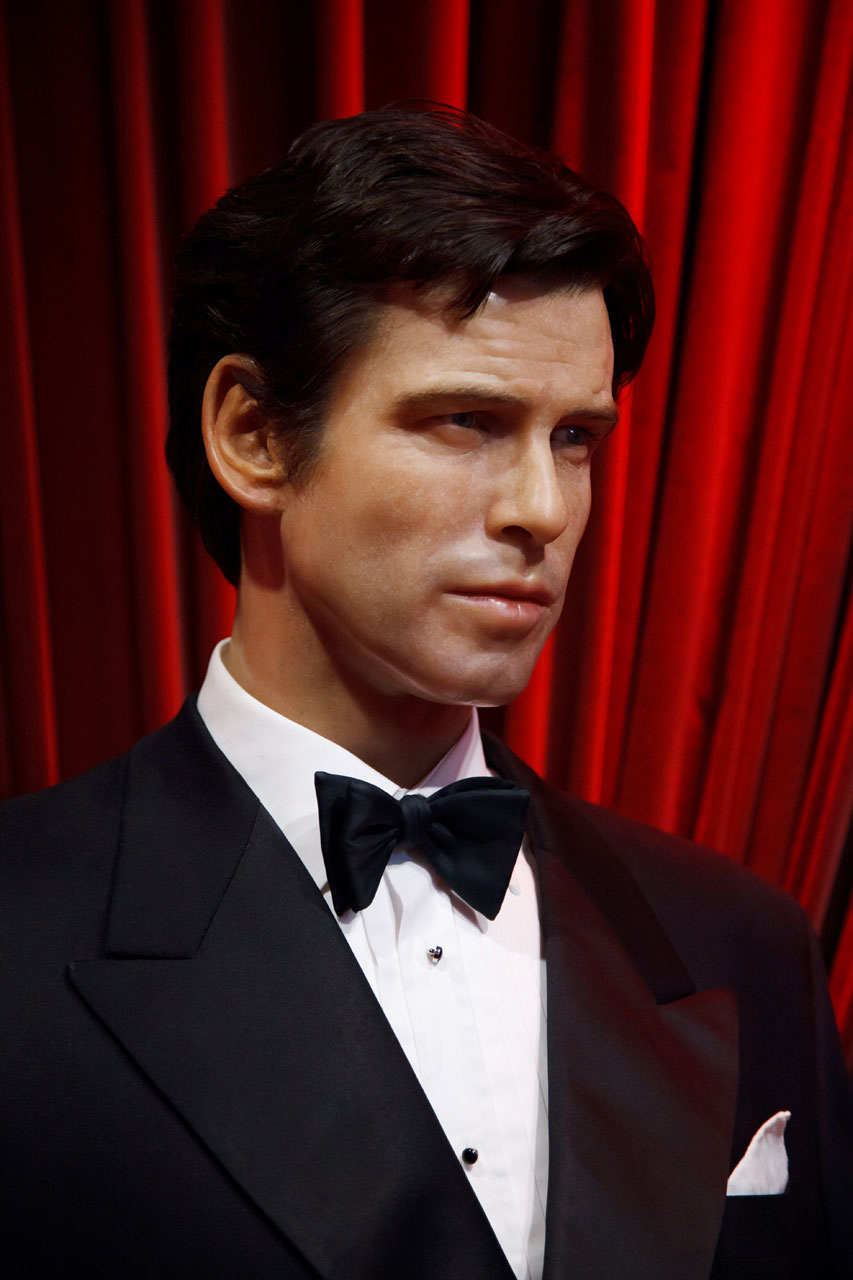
Pierce brosnan wax figure.